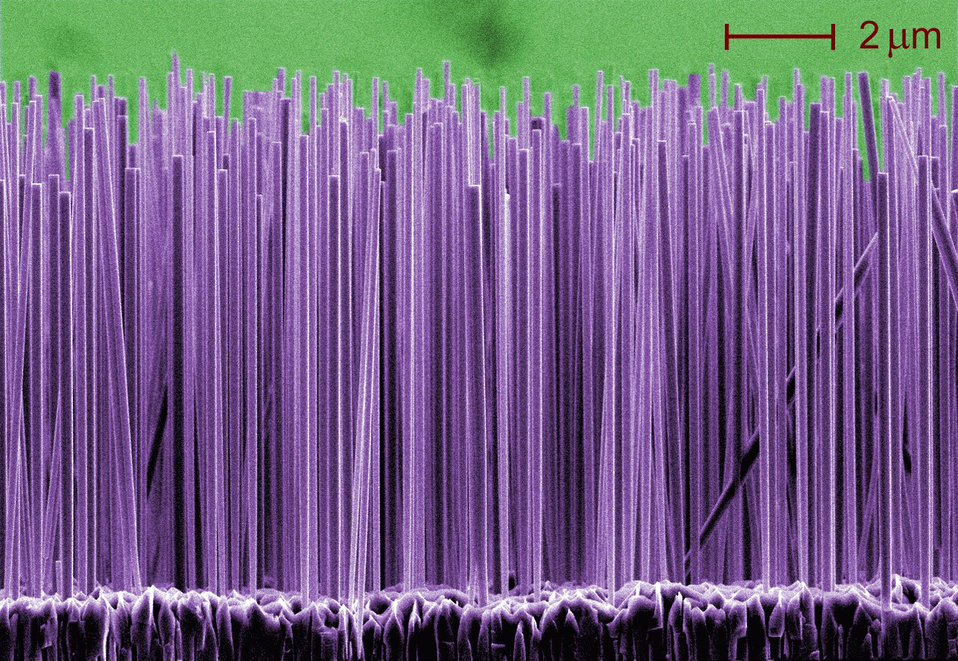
Nanowires that Emit UV Light

NIST 'grows' semiconductor nanowires that emit ultraviolet light as part of a project to make prototype nano-lasers and other devices and the measurement tools needed to characterize them. Electron micrograph shows the gallium nitride wires growing on a silicon substrate (color added for contrast.)